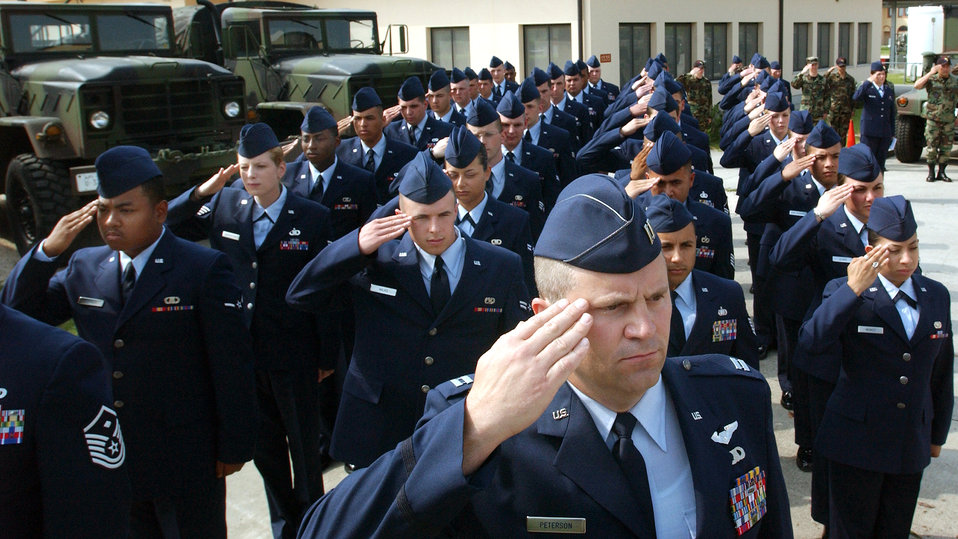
In remembrance

Airmen of the 603d Air Control Squadron present arms during a remembrance ceremony at Aviano Air Base, Italy, on Friday, May 19, 2006. The ceremony was dedicated to five squadron Airmen who made the ultimate sacrifice for their country.